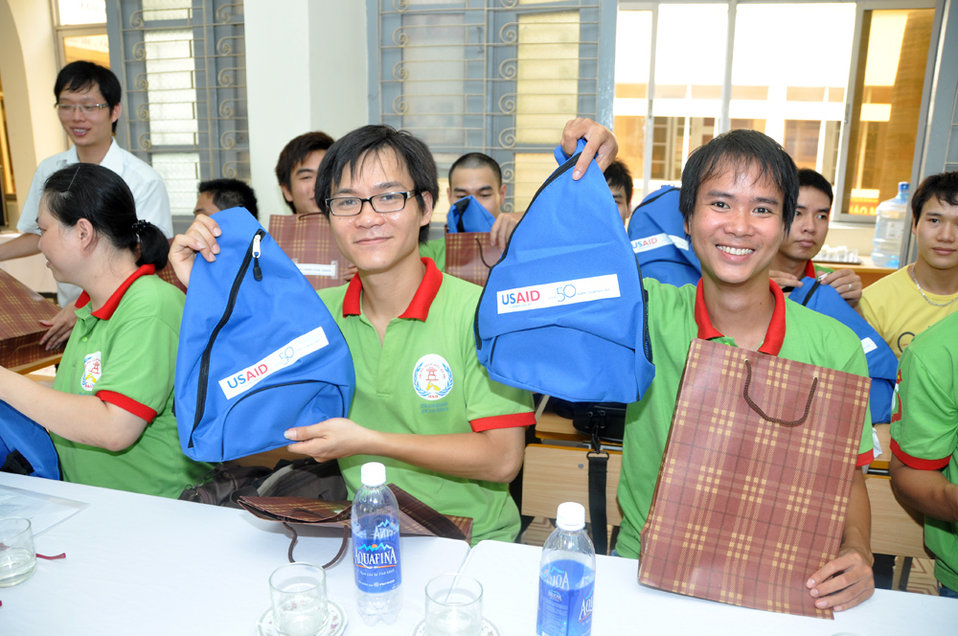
Hearing Impaired Graduates receive USAID 50th shoulder bags on June 22, 2011.